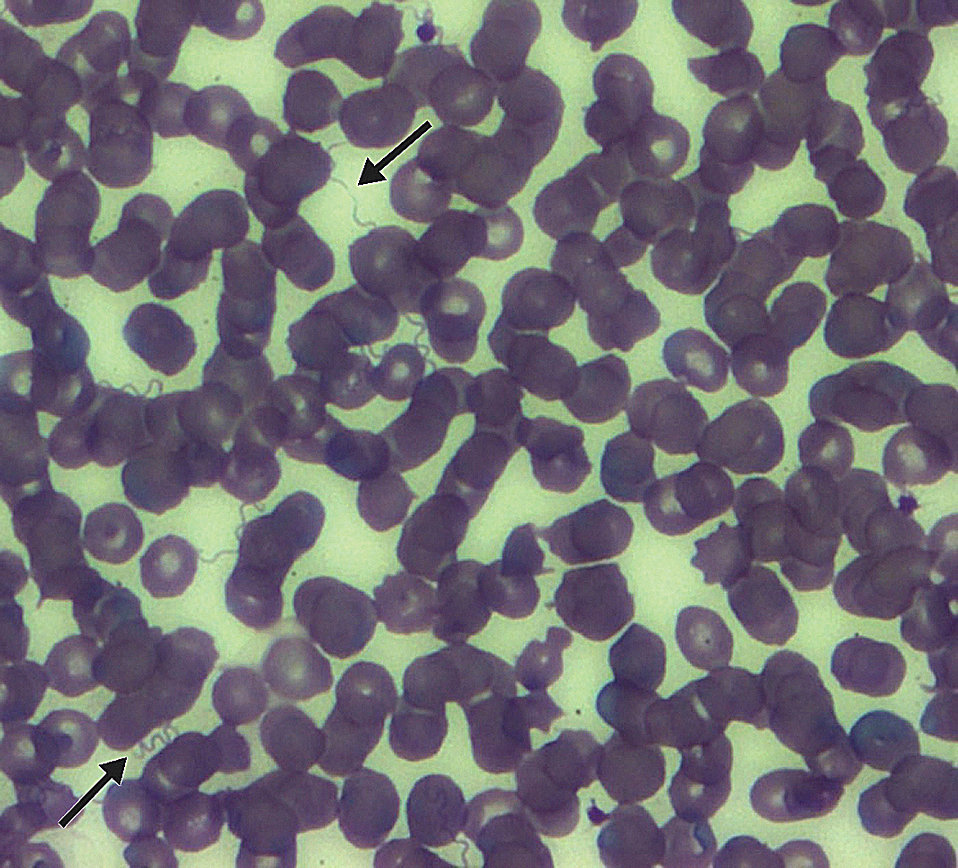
This photomicrograph shows a stained thin smear of peripheral blood from a newborn child (born in Colorado in 2011) indicating the presence of numerous Borrelia hermsii spirochetes (arrows), consistent with a tickborne relapsing fever (TBRF) infection.